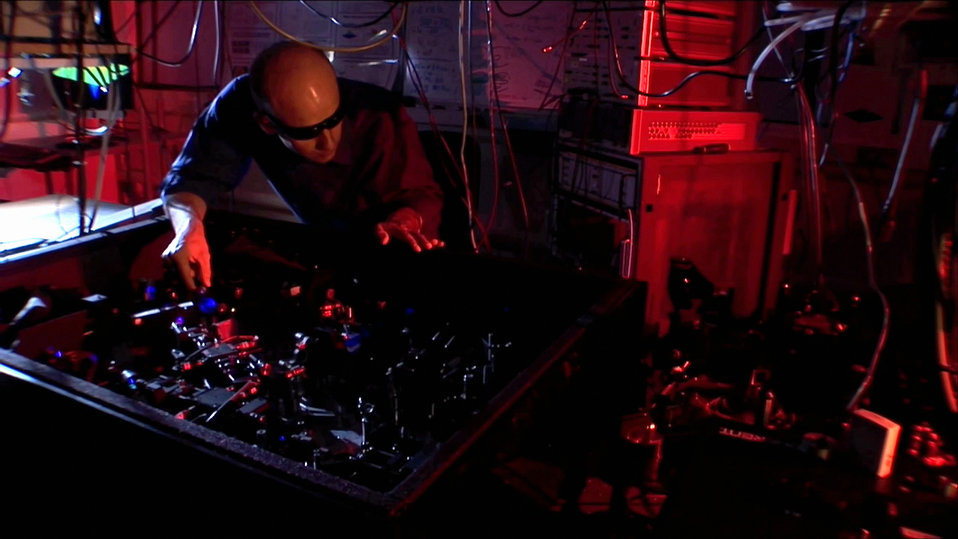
Quantum Cats

NIST research associate Thomas Gerrits at the laser table used to create 'quantum cats' made of light.